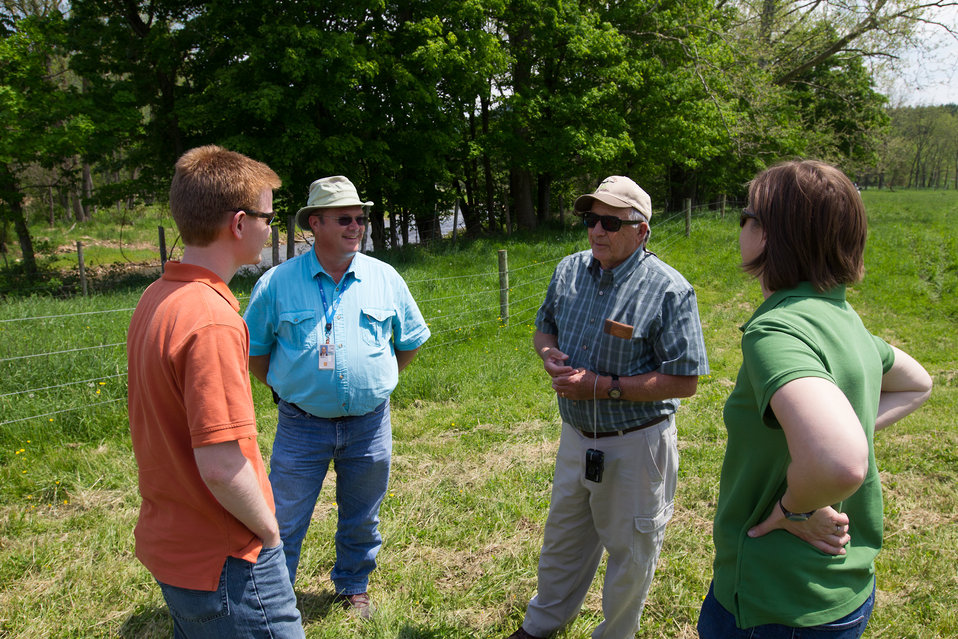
Celebrating 1 Million Feet of Conservation Fence in WV

Partners for Fish and Wildlife Program